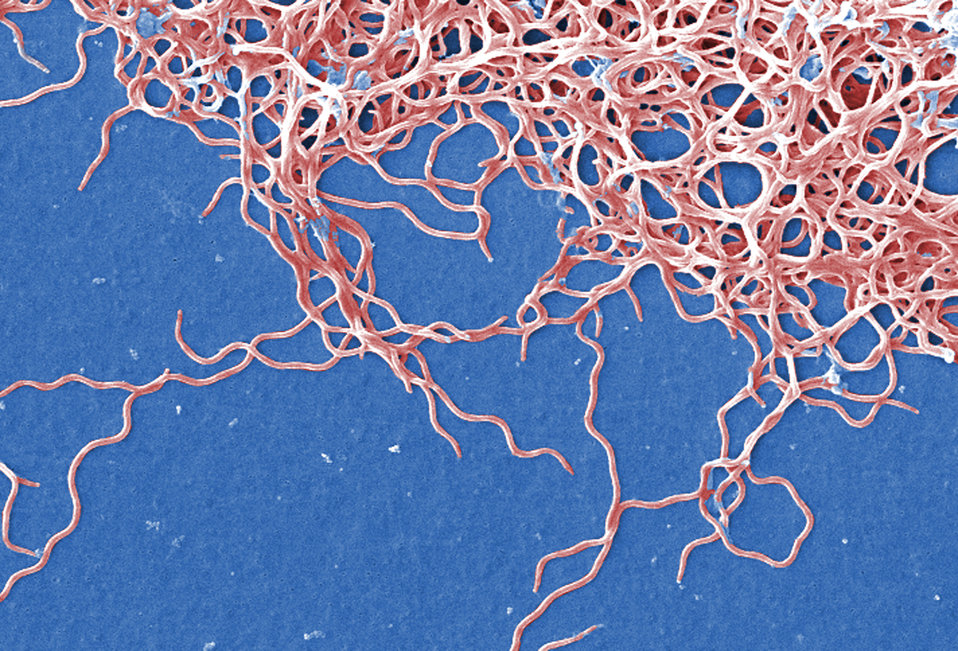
This digitally-colorized scanning electron micrograph depicts a grouping of numerous Gram-negative, anaerobic, Borrelia burgdorferi bacteria, which had been derived from a pure culture.